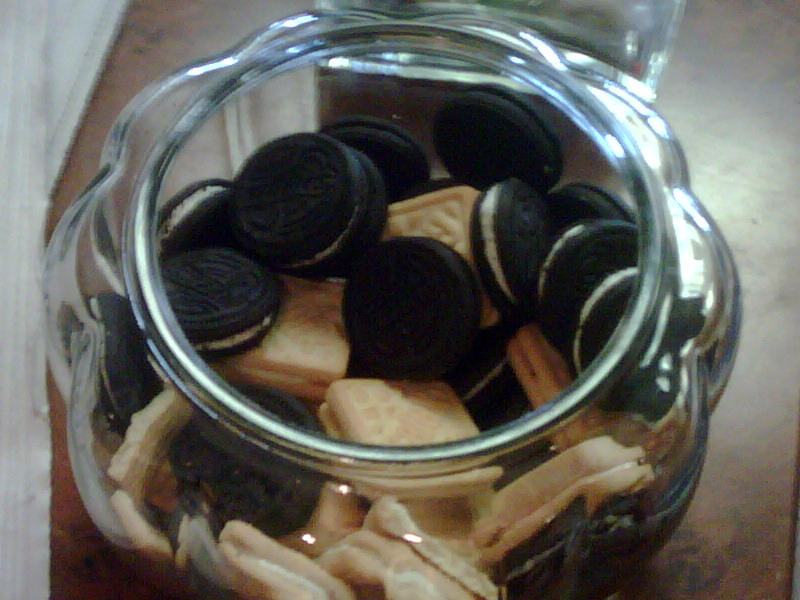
'Breakfast' On the Road

Breakfast for U.S. Secretary of State Hillary Rodham Clinton's aid Philippe Reines during the Secretary's visit to Brazil on March 3, 2010.